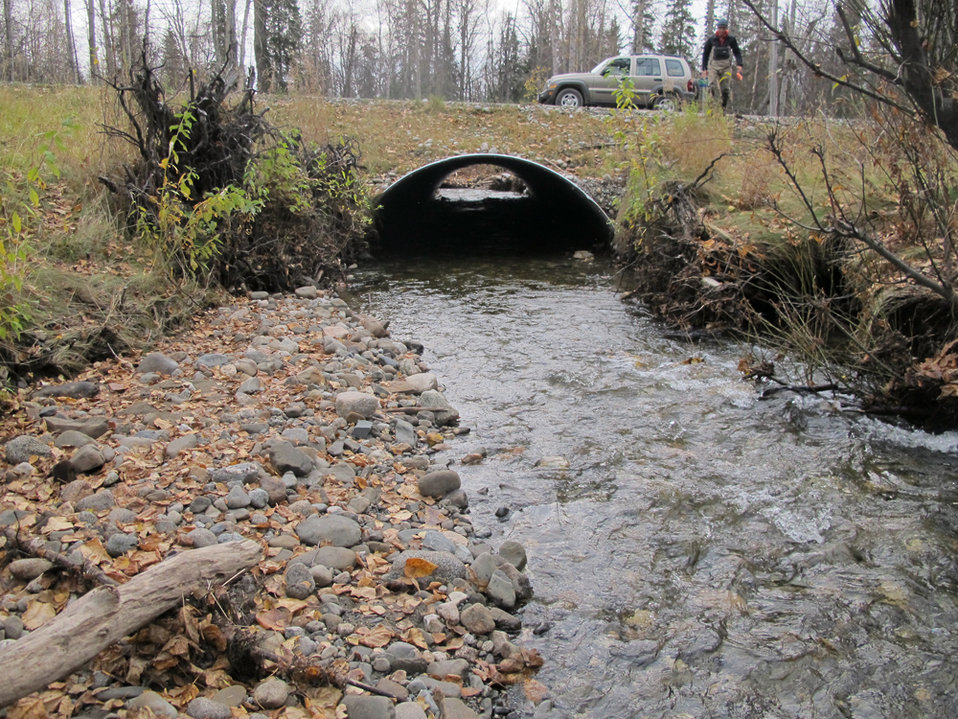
Colter Creek's fish-friendly culvert

Our Fish Passage Program partnered with the Mat-Su Borough to replace a 5 ft round culvert on Colter Creek with this fish-friendly 14 ft arch culvert following the 2006 floods. USFWS/Katrina Mueller